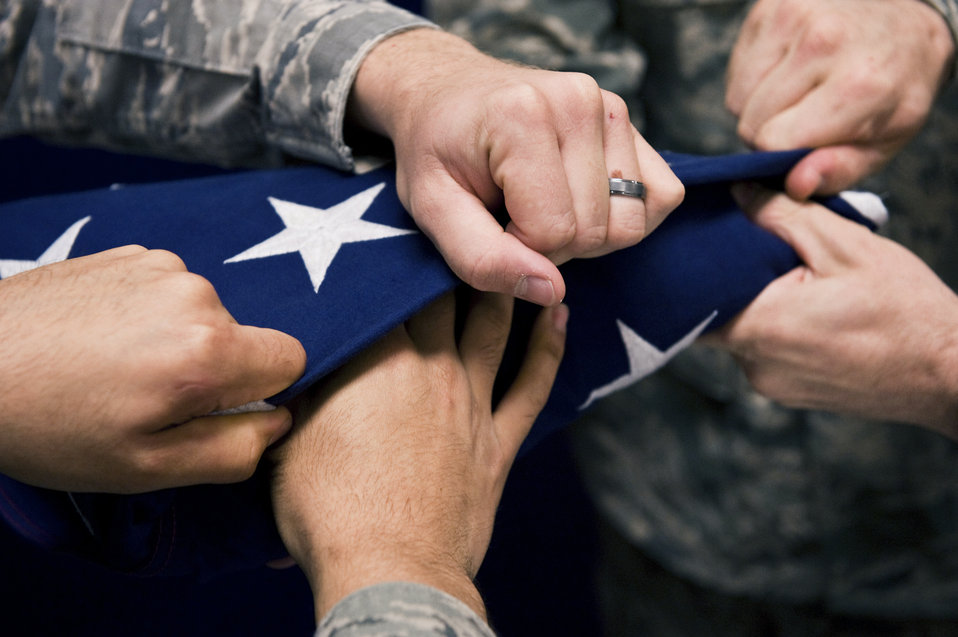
United in respect

Members of the honor guard fold the flag during a practice session Aug. 19, 2010, at Joint Base Elmendorf-Richardson, Alaska.